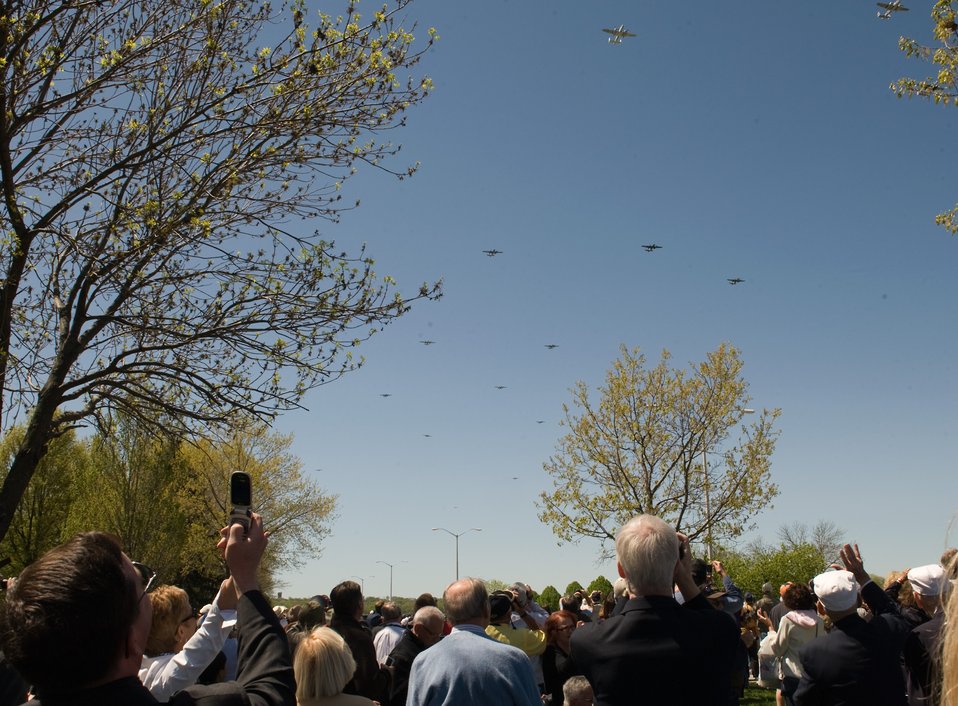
68th Reunion of Doolittle Raiders Flyover

Doolittle Raiders (right, wearing white caps) and other visitors at the National Museum of the U.S. Air Force were treated to the sight of 17 B-25 Mitchell Bombers flying in formation over Wright-Patterson Air Force Base, Ohio on April 18, 2010 for the 68th reunion of the Doolittle Raiders.